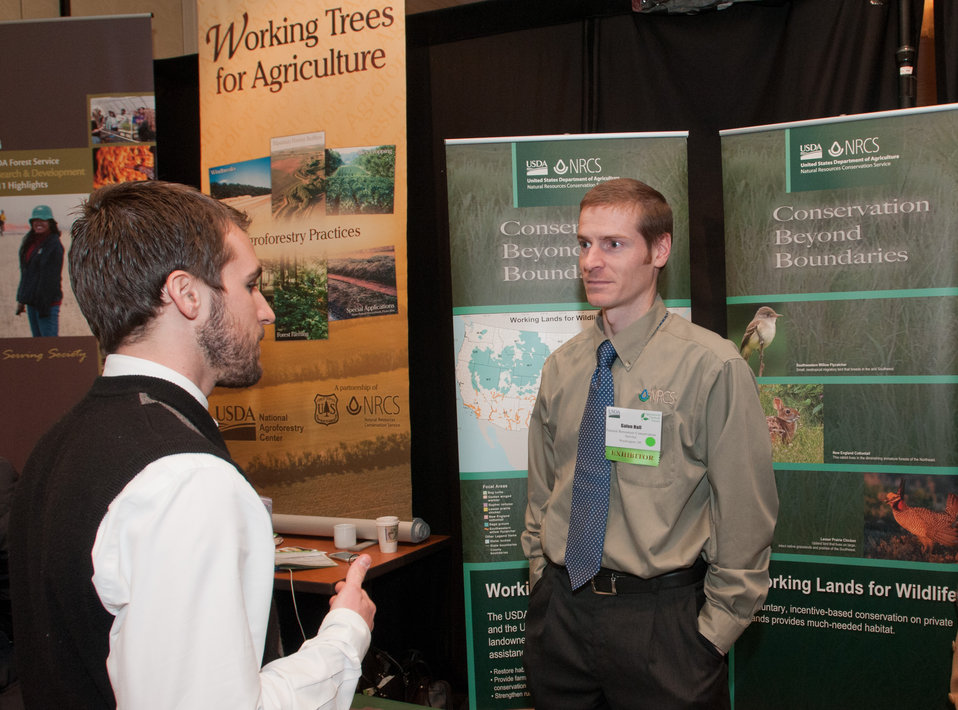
2013 Agricultural Outlook Forum, held at the Crystal Gateway Marriott Hotel, Arlington, Virginia on Thursday, Feb. 21, 2013. This annual Forum brings together producers, policymakers, business, government, and industry leaders to meet, exchange ideas, and discuss timely agriculture issues in the exhibit hall at the Ag Outlook Forum.